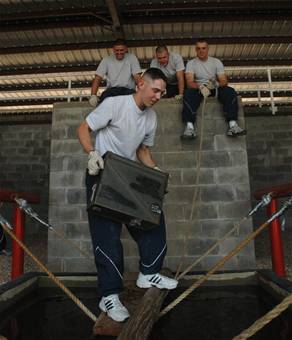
Drill team prepares for upcoming drill season

Airman 1st Class Hank Burns crosses a rope bridge while team members look on during a leadership reaction course March 30 at Maxwell Air Force Base, Ala. The traveling component of the Air Force Honor Guard, the drill team serves as Air Force ambassadors to recruit, retain and inspire Airmen around the globe. Airman Burns is an Air Force Honor Guard drill team member.